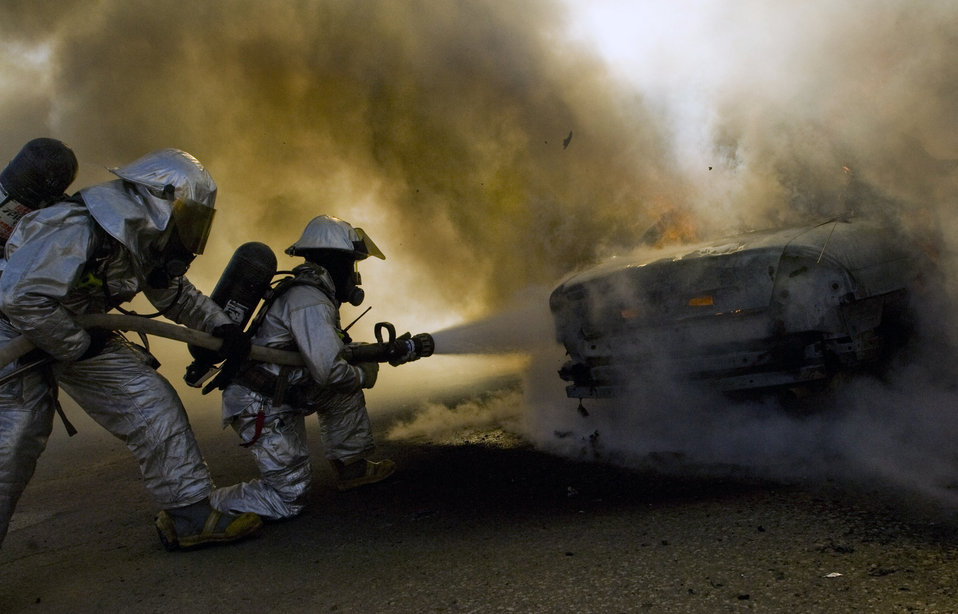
Testing under fire

Firefighters with the 407th Expeditionary Civil Engineer Squadron practice their response to a vehicle fire during an exercise Dec. 17 at Ali Base, Iraq.